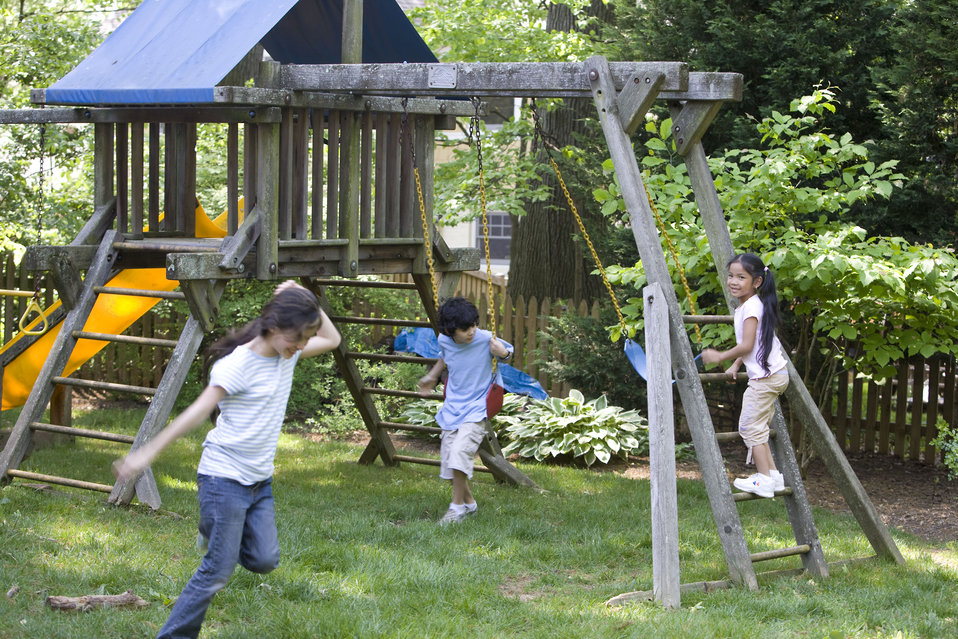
Children love playing outside, and these children were thoroughly enjoying their wooden swing set, and all were having fun in the fresh outdoor air, and the beautiful weather. It's important to note that older wooden playsets may have been treated with arsenic and/or creosote, and therefore, parents need to know if these chemicals were used in their manufacture.